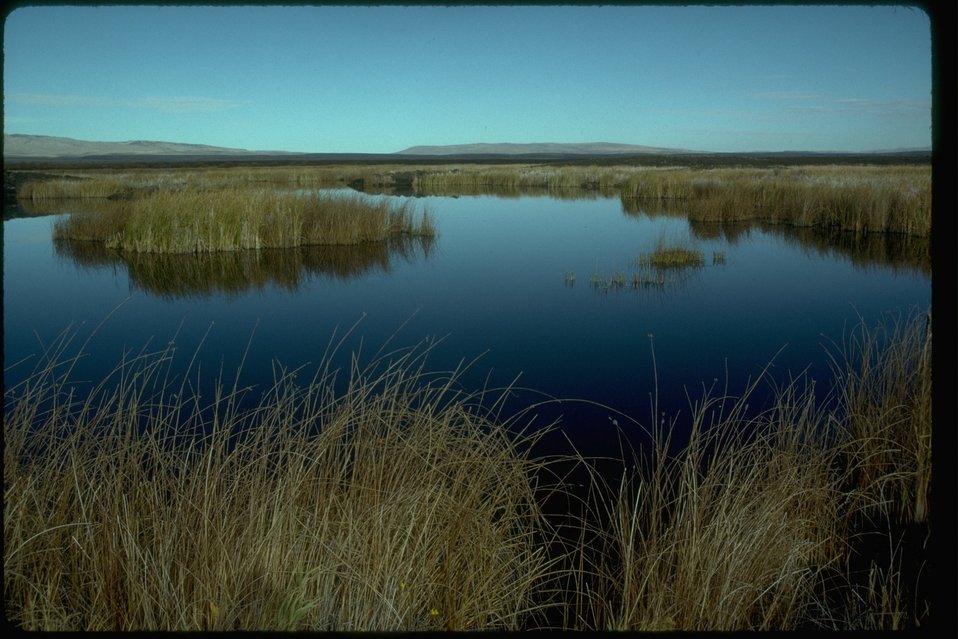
Riparian area around Batch Lake in the Jordan Craters Wilderness Study Area. OR 3-128